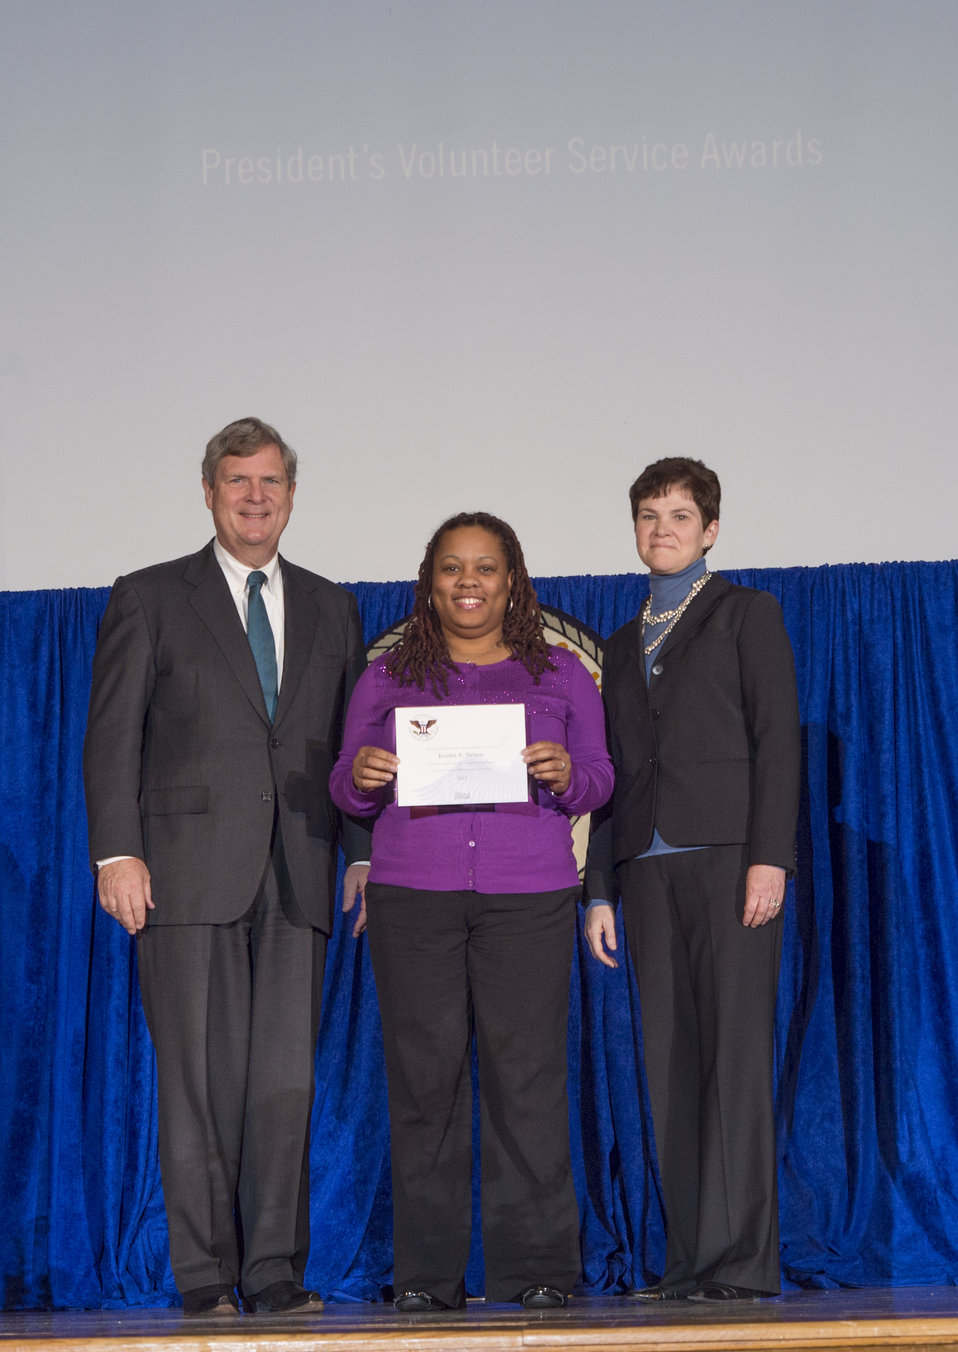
Agriculture Secretary Tom Vilsack and Agriculture Deputy Secretary Krysta Harden present the President’s Gold Volunteer Service Award to Keisha A. Nelson at the 2013 Secretary's Honor Awards in the Jefferson Auditorium at the U.S. Department of Agriculture (USDA) in Washington, D.C. on Wednesday, Dec. 11, 2013. The President’s Gold Volunteer Service Award is given to an employee that has served 500 hours or more of service with a qualifying organization over the 12-month period beginning July 1, 2010, and ending June 30, 2011.